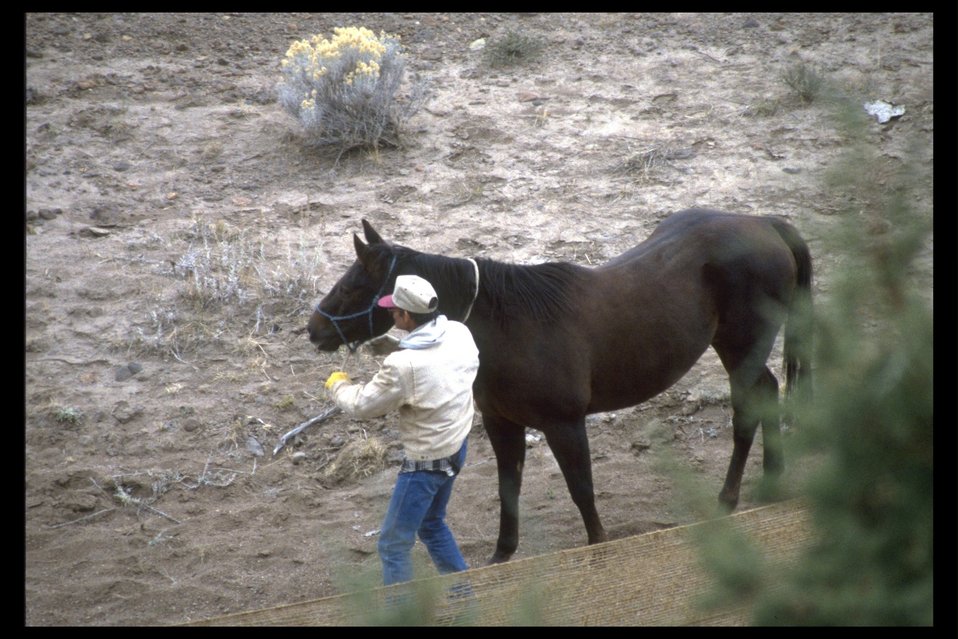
Moving a Prather horse in place at South Steens HMA trap.